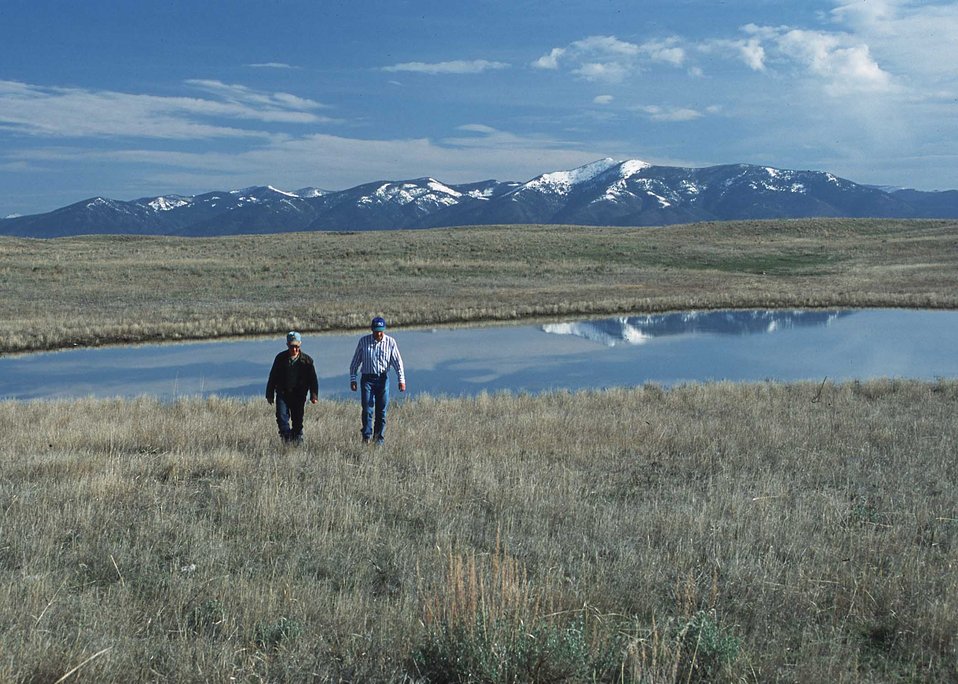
Source of livestock water on rangelands in northcentral Montana.